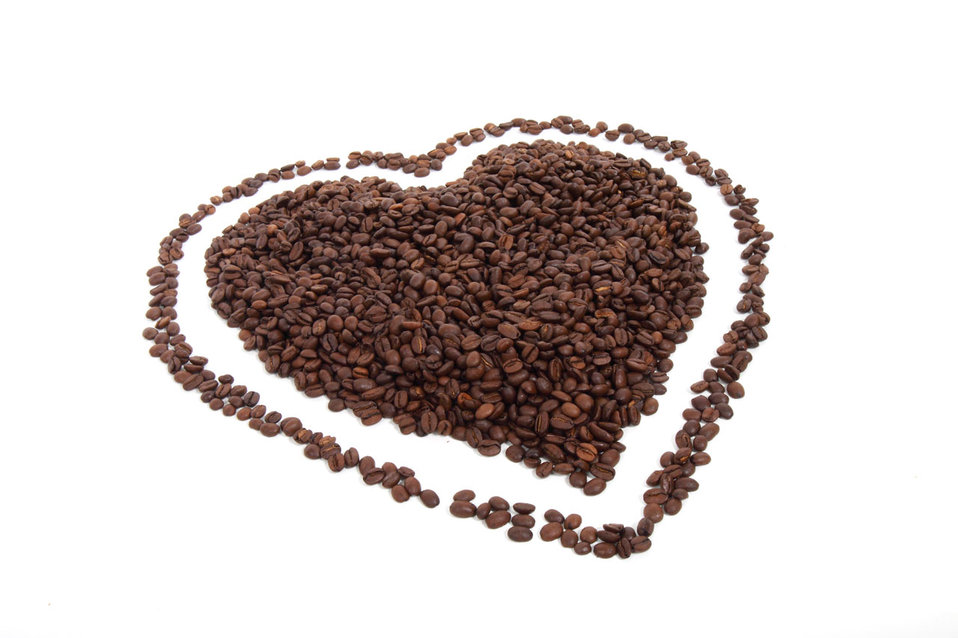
Coffee heart

Heart shape made with coffee beans isolated on white background.